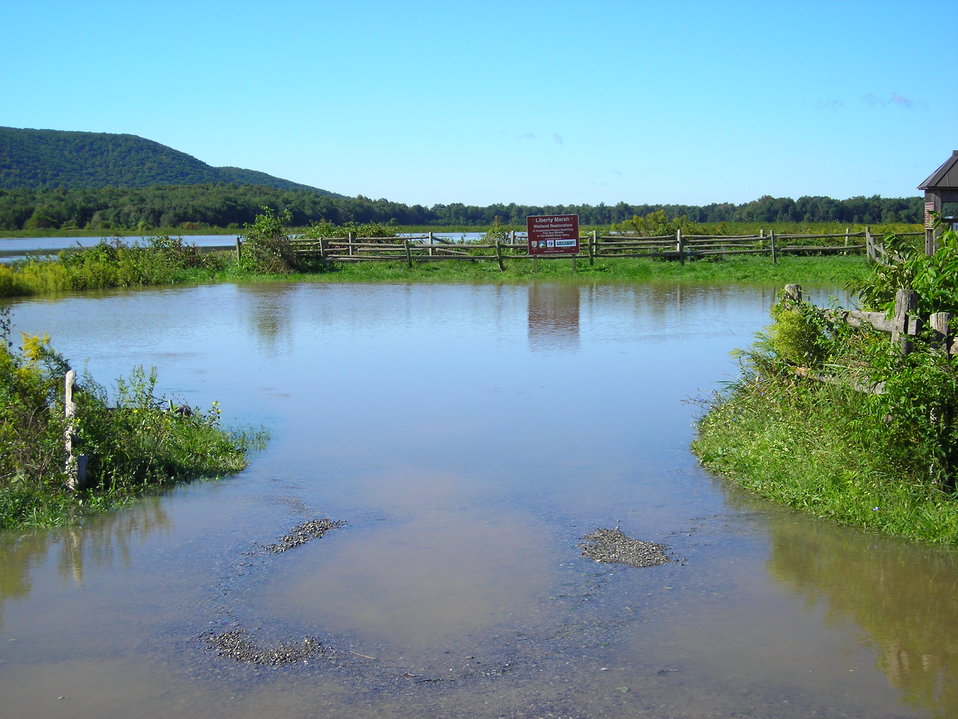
Hurricane Damage at Wallkill River National Wildlife Refuge August 30, 2011

Flooding at Liberty Loop Trail and impoundments, Sussex, NJ.